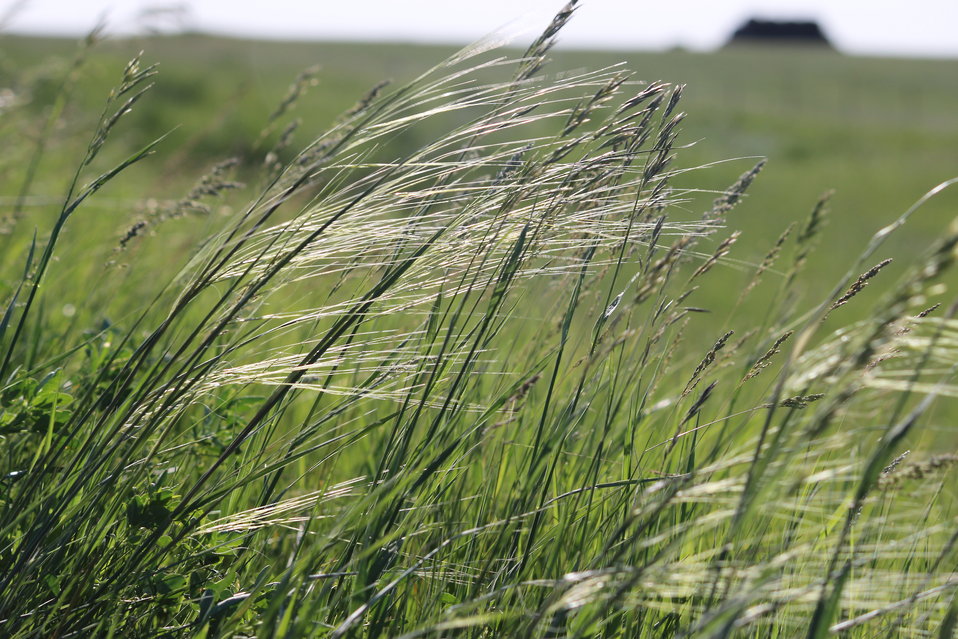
Porcupine Grass

Stipa spartea (Porcupine grass) is a needlegrass with a long awn (the 'hair' extending from each seed). The seed of these cool season grasses is very sharp and twists to seed itself into the ground with help from the awn. However, these needles can cause problems to cattle and other grazers when foraged too late. In some cases, the mature needle can work its way through the hide, flesh, or organs of its consumer. It is a bunchgrass native to the prairies of North Dakota, that generally decreases with grazing pressure.